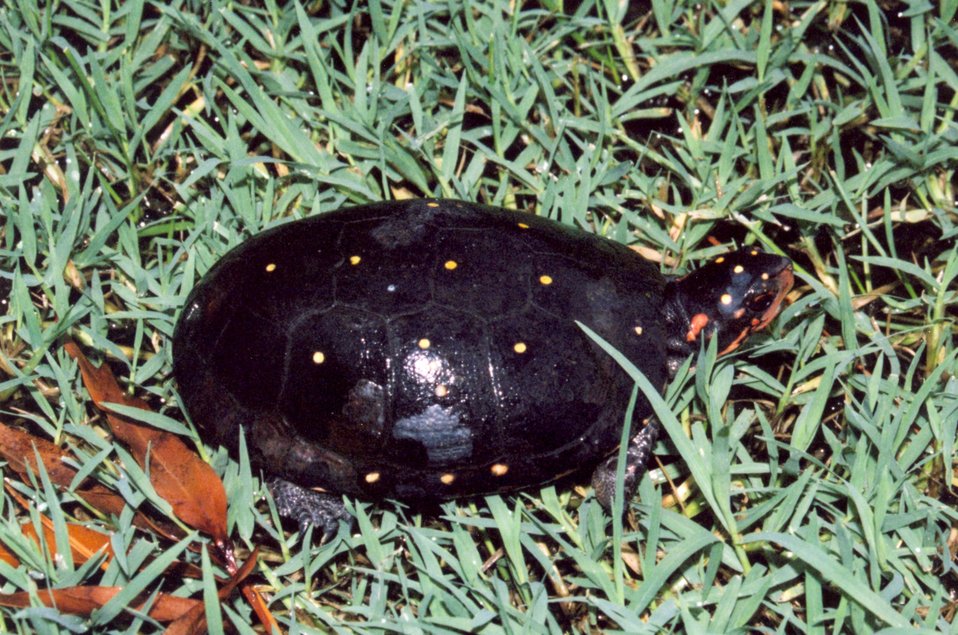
Spotted turtle